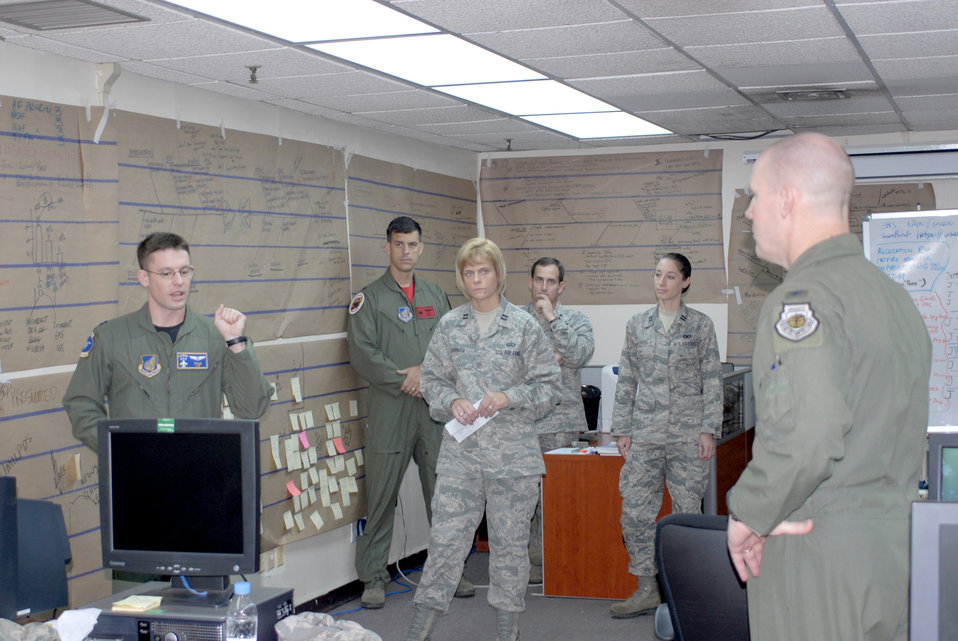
Osan AFSO21 RIE

Capt. Christopher Moeller (left) briefs Col. Patrick C. Malackowski (far right) during an Air Force Smart Operations for the 21st Century Rapid Improvement Event Oct. 8, 2010, at Osan Air Base, South Korea. Captain Moeller is assigned to the 51st Fighter Wing and Colonel Malackowski is the 51st FW commander.